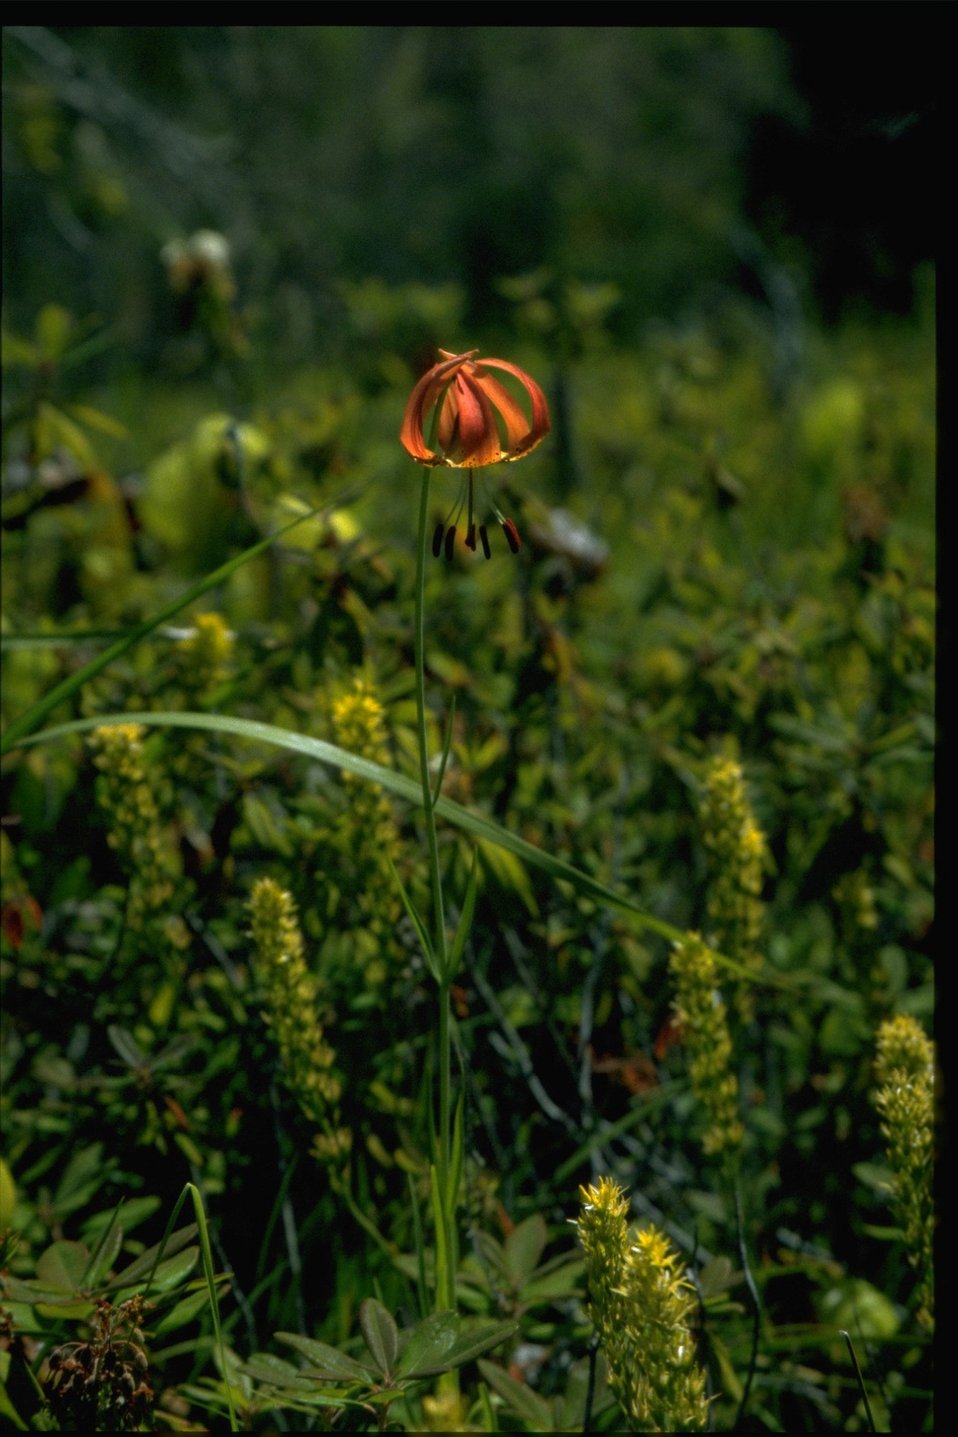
Medium shot of Lilium pardalinum var vollmeri.